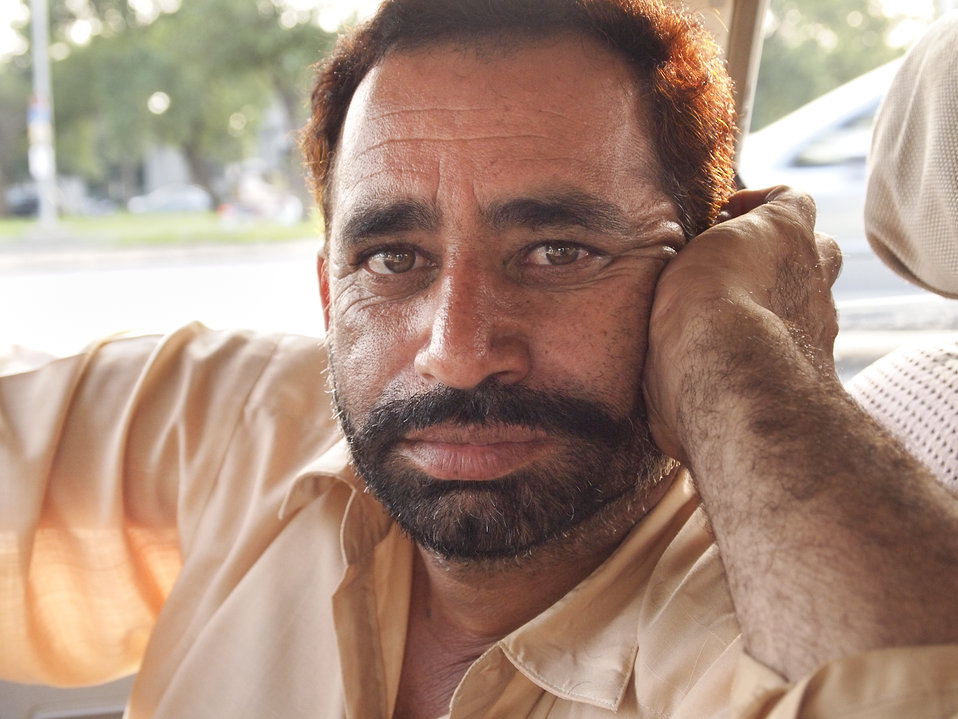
Islamabad, September 24, 2012 – Photo by Seema Gul, taken at Lake View Park, Rawal Lake, Islamabad - Shot from a USAID-organized 'photo camp' for 16 young aspiring journalists from FATA.